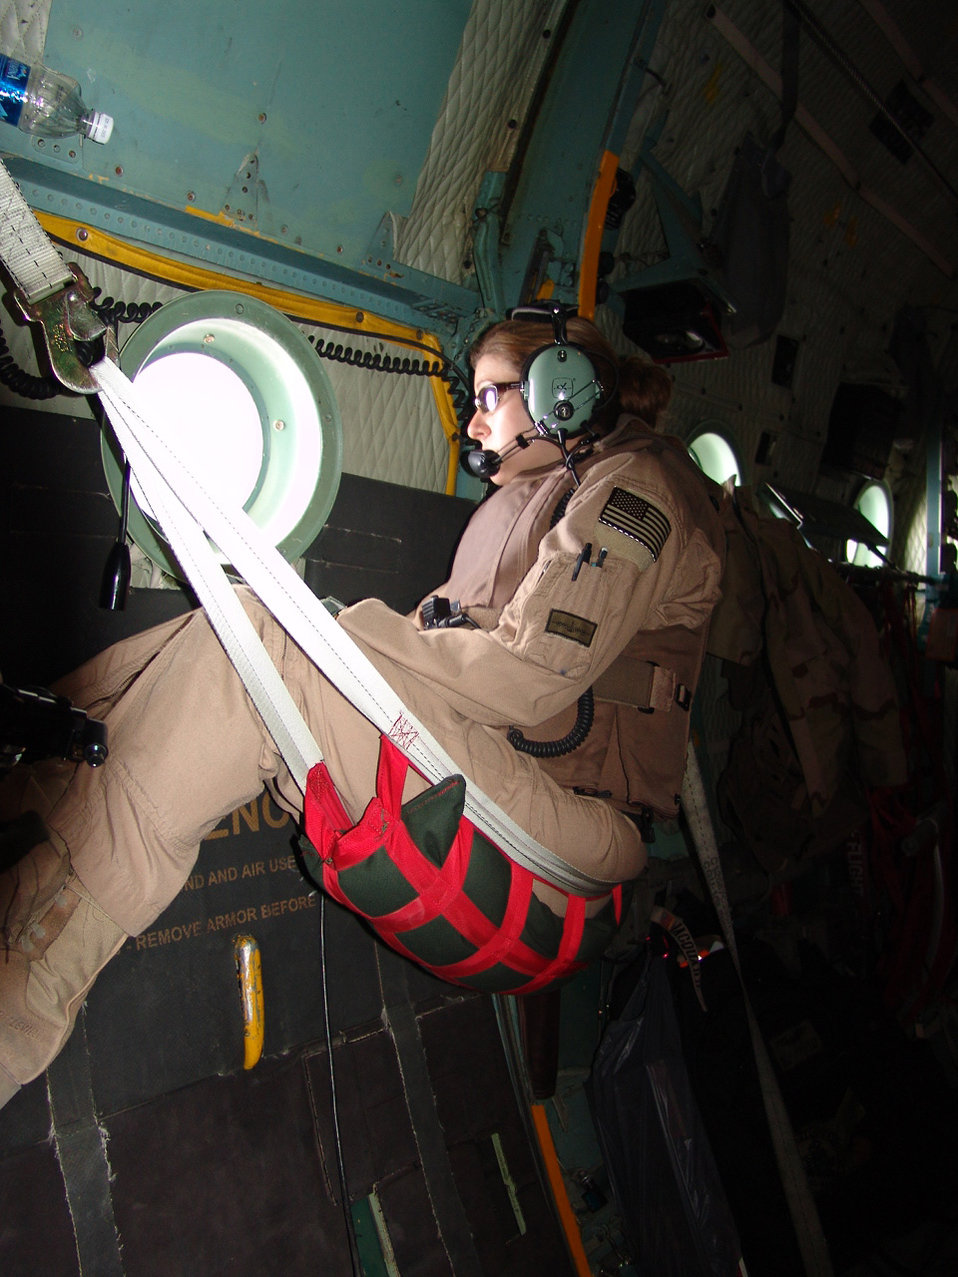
Hangin’ out

OVER IRAQ (AFPN) -- Staff Sgt. Katie Jacquard scans for threats while aboard a C-130 Hercules. She is a loadmaster with the 746th Expeditionary Airlift Squadron. The 746th EAS is one of two airlift squadrons assigned to the 386th Air Expeditionary Wing and provides tactical airlift supporting Operation Iraqi Freedom.